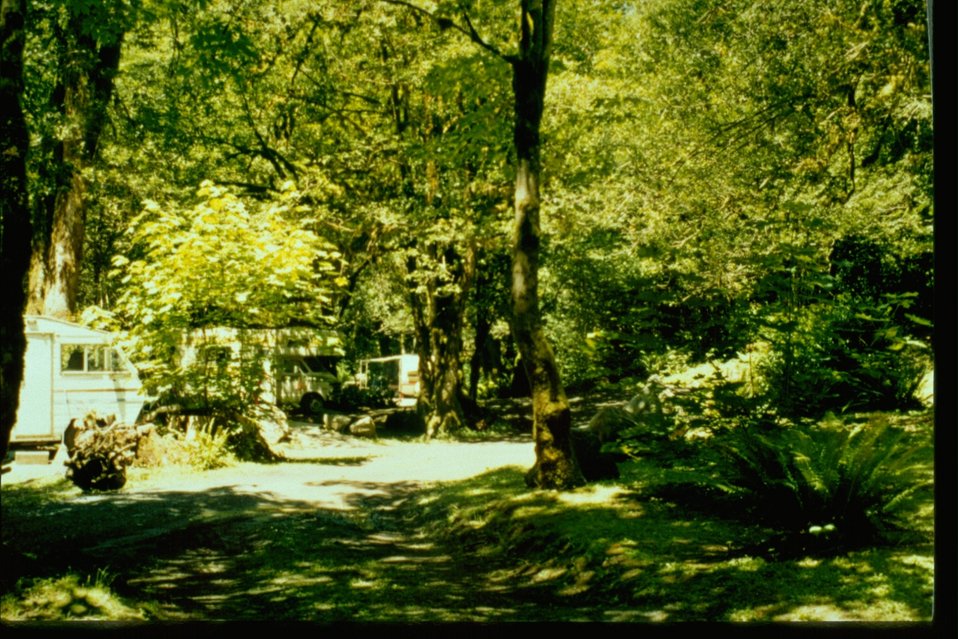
Bear Creek Recreation Site.